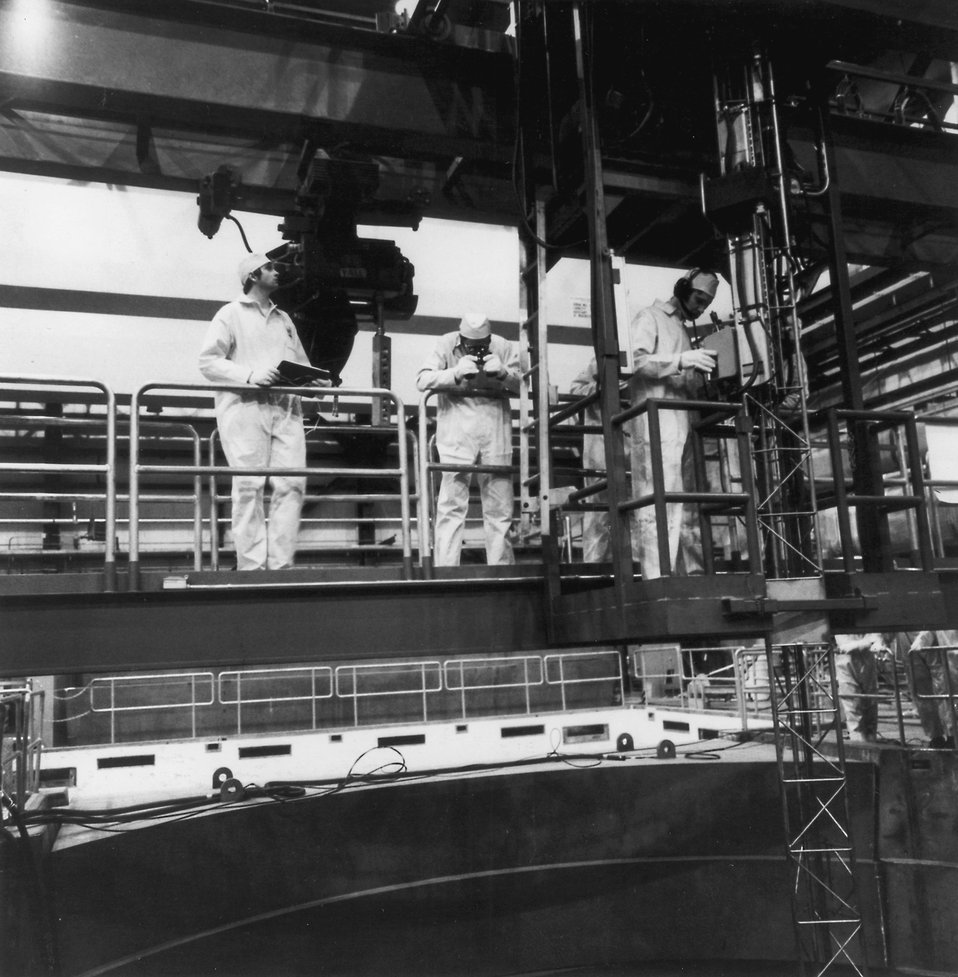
Nuclear Fuel Lowered into Place Duane Arnold Energy Center reactor operators lower the first nuclear vessel February 27, 1974. Circa 1974.